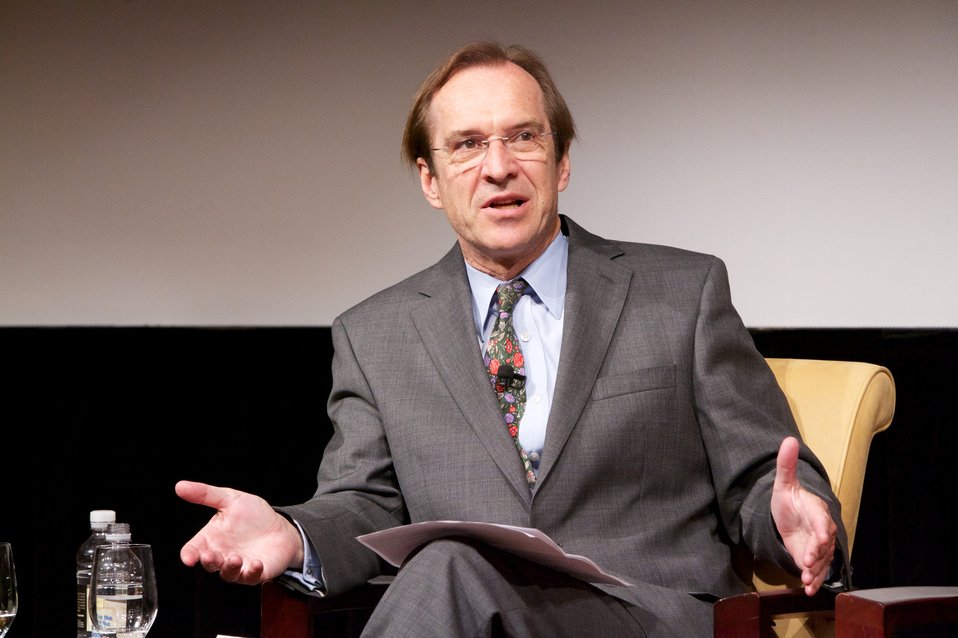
Jazz Diplomacy: Sending America's Music to the World